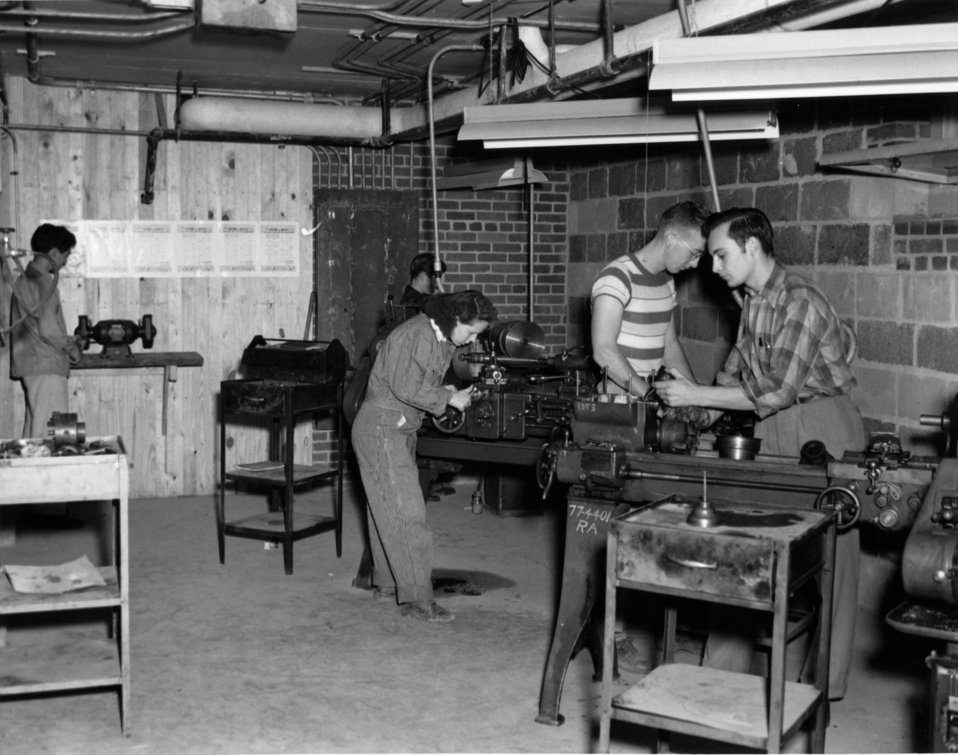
Schools at Oak Ridge